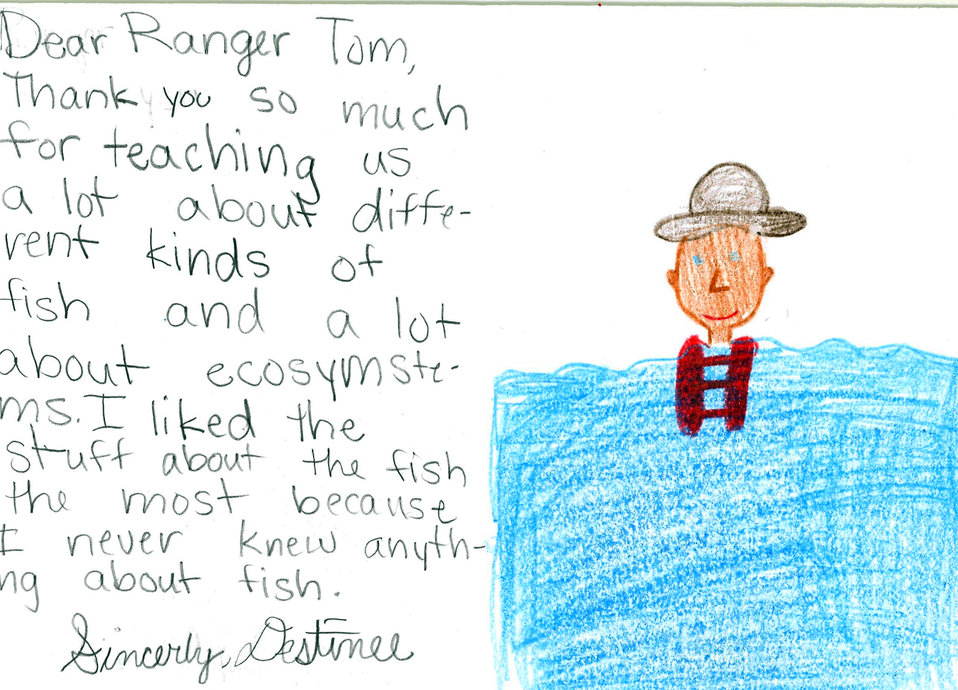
Jacket and hat required

If day-to-day burdens have caused you to forget the simple joys of nature, consider this delightful cure: thank-you notes written by elementary school students to park rangers in the U.S Army Corps of Engineers Sacramento District.

Here, Ranger Tom appears to be swimming nicely while wearing his life jacket and uniform hat.